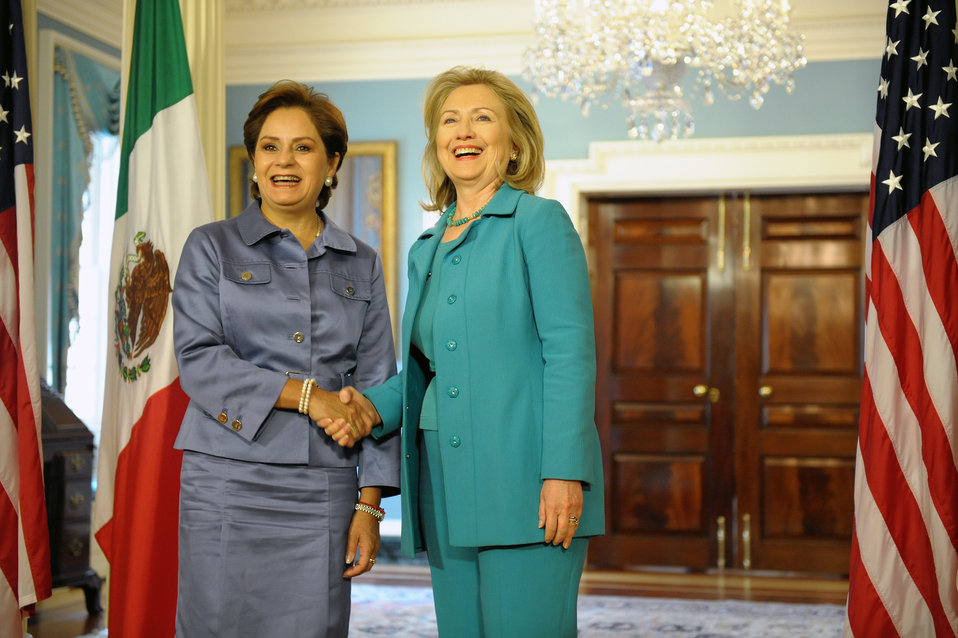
Secretary Clinton Shakes Hands With Mexican Foreign Minister Espinosa

U.S. Secretary of State Hillary Rodham Clinton shakes hands with Mexican Foreign Minister Patricia Espinosa after their bilateral meeting, at the U.S. Department of State in Washington, D.C., on April 29, 2011.